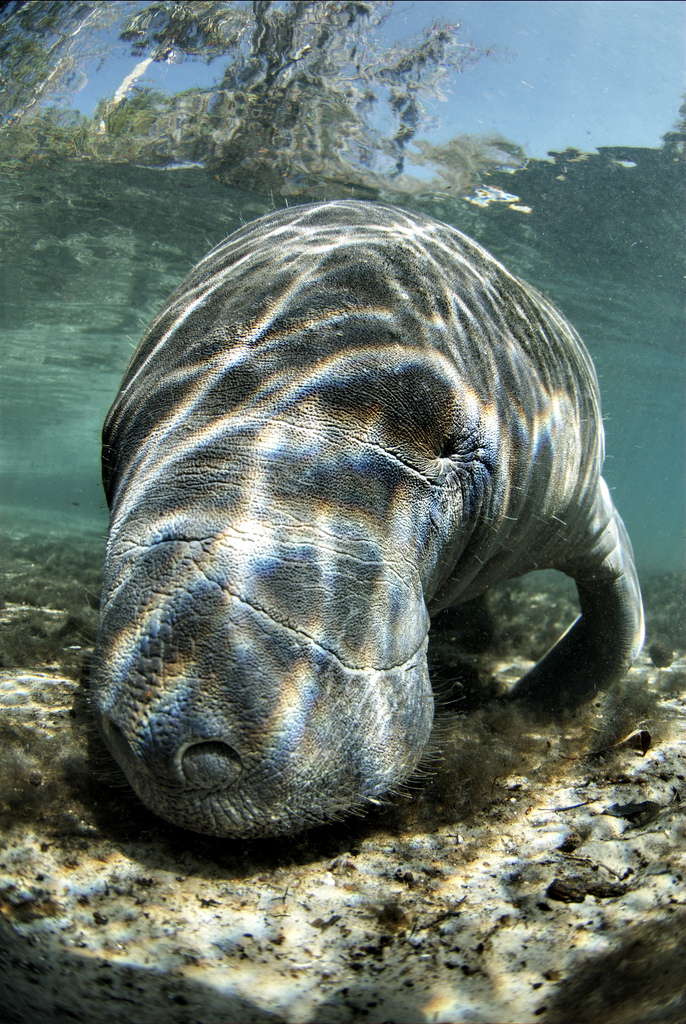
Endangered Florida manatee (Trichechus manatus)

Photo credit: David Hinkel

This manatee is sleeping in shallow water in order to benefit from the sun’s radiant heat on his back, while submerged in the springs 72 F degree waters. During the cold spells, most manatees prefer resting in shallow water for this reason.

The Crystal River National Wildlife Refuge, was established in 1983 specifically for the protection of the endangered West Indian Manatee. This unique refuge preserves the last unspoiled and undeveloped habitat in Kings Bay, which forms the headwaters of the Crystal River. The refuge preserves the warm water spring havens, which provide critical habitat for the manatee populations that migrate here each winter.